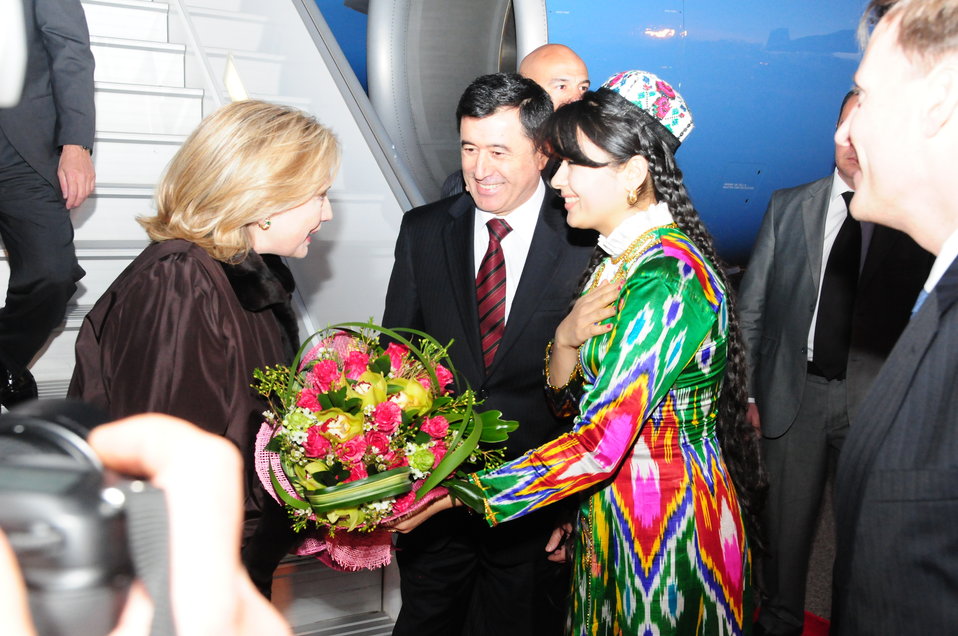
Uzbek Foreign Minister Norov and an Uzbek Woman Welcome Secretary Clinton

Uzbek Foreign Minister Norov and a woman in a traditional Uzbek dress welcome U.S. Secretary of State Hillary Rodham Clinton to Tashkent, Uzbekistan, on December 2, 2010.